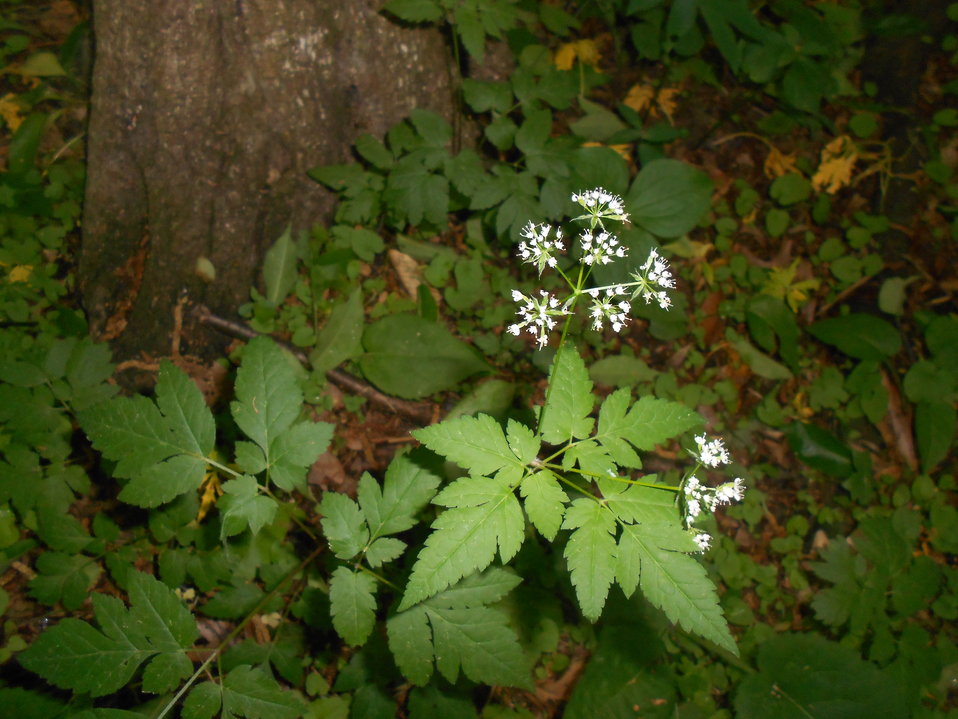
Finding Flowers in the Woods

One student was fascinated by the fact that such pretty flowers could grow in a woodland setting. This photo is the result of her zooming in and out and adjusting her posture until she could view the flowers and leaves just right! This beautiful plant is called Sweet Anise (Osmorhiza longistylis) and is native to Western New York.